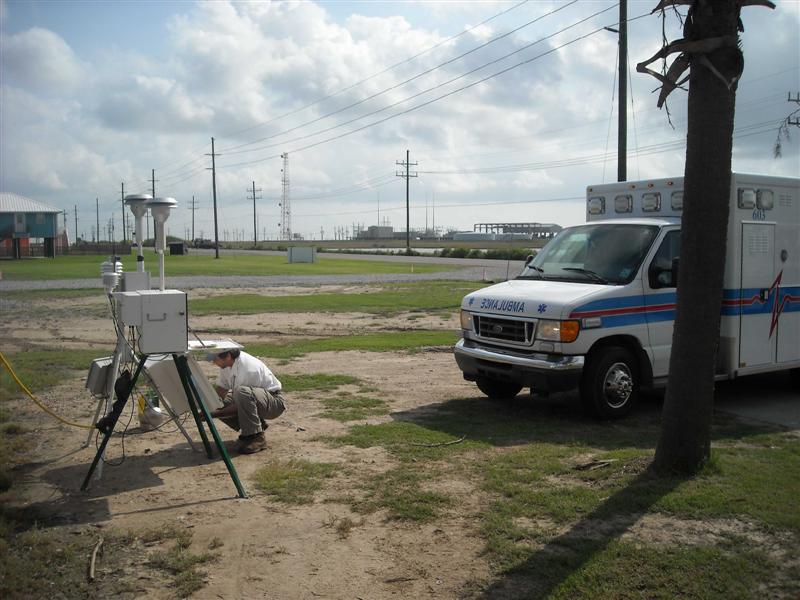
Emergency response vehicle and air monitoring station

Emergency response vehicle parked in close proximity to air monitoring station in Louisiana